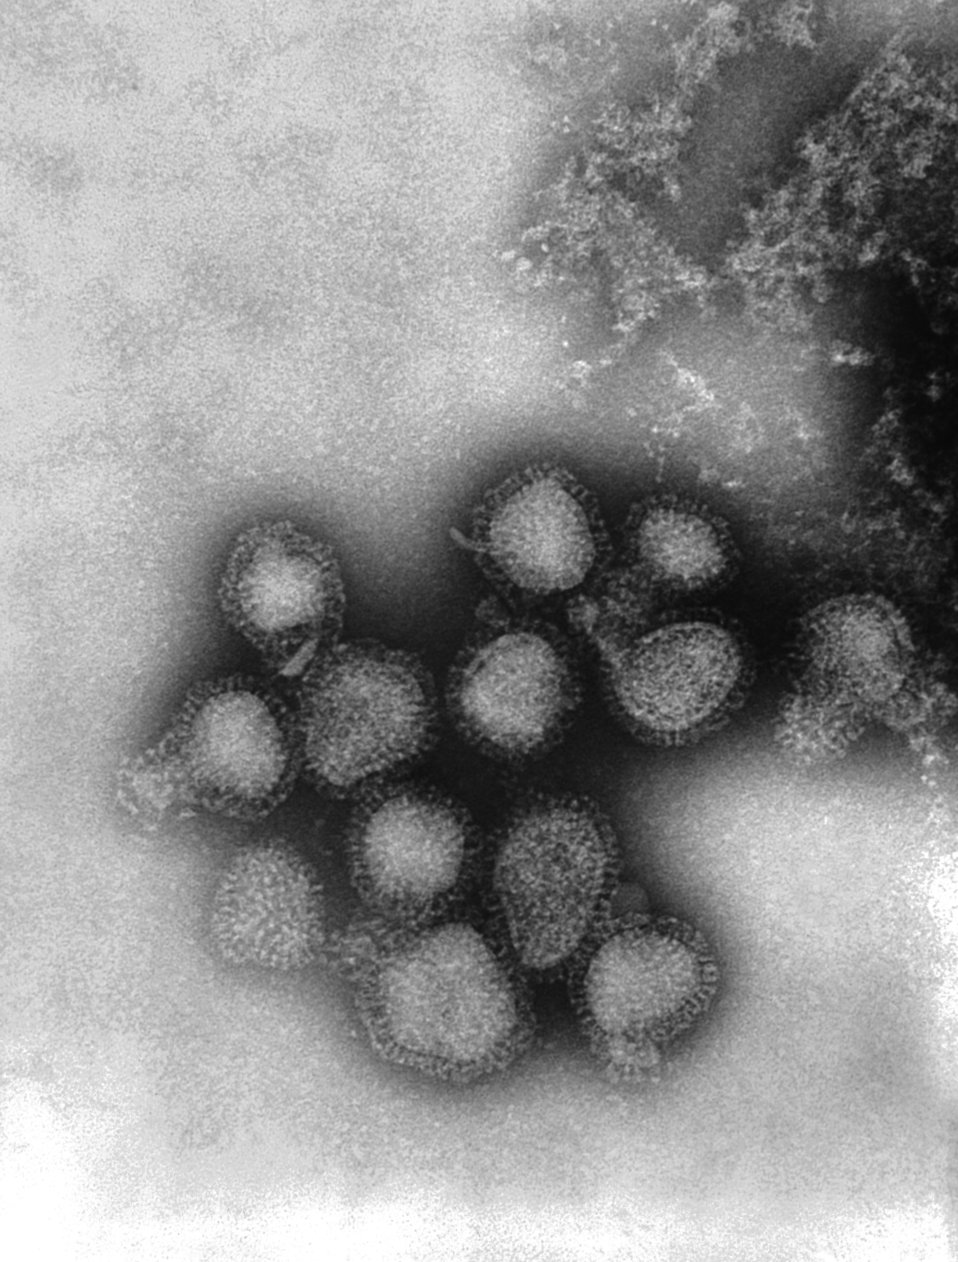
This negatively-stained transmission electron micrograph (TEM) revealed the presence of a number of Hong Kong flu virus virions, the H3N2 subtype of the influenza A virus. This virus is a Orthomyxoviridae virus family member, and was responsible for the flu pandemic of 1968-1969, which infected an estimated 50,000,000 people in the United States, killing 33,000. Note the proteinaceous coat, or capsid, surroundind each virion, and the hemagglutinin-neuraminidase spikes, which differ in terms of their molecular make-up from strain to strain.